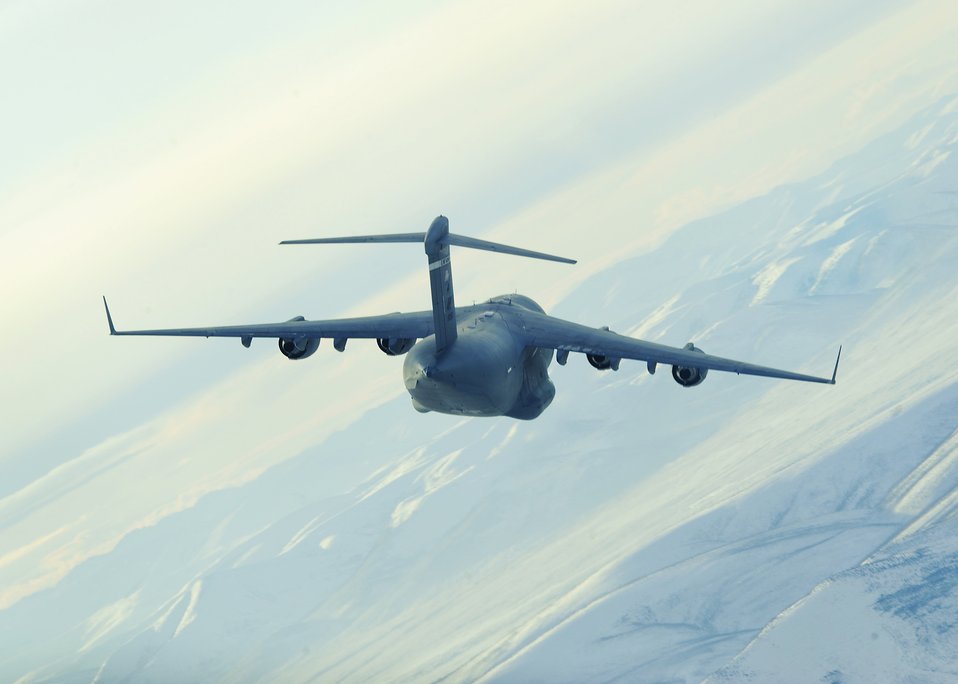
C-17s participate in Pacific Rendezvous

A C-17 Globemaster III from the 517th Airlift Squadron soars over the mountains near Fort Greely, Alaska, Feb. 10, 2010. The aircraft was participating in Pacific Rendezvous, an exercise to improve tactical awareness among aircrews.